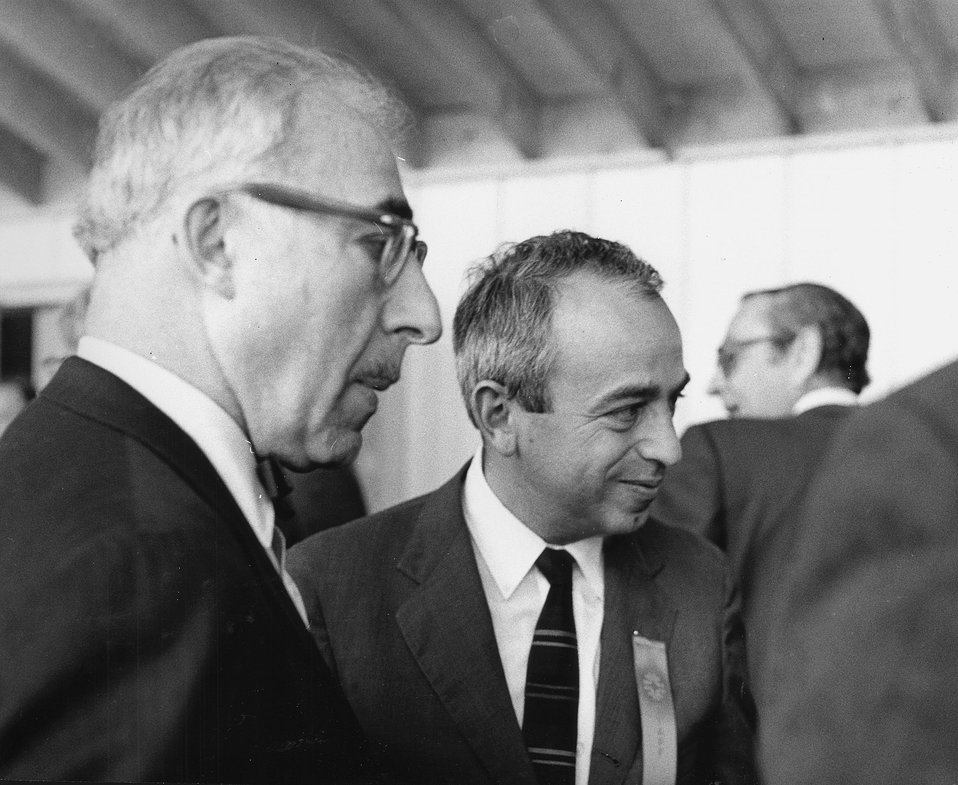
William Karp, Technical Consultant and Staff Director, Illinois Commission on Technology Progress; and Edwin Goldwasser, Deputy Director, NAL, at the reception in The Curia.
c.1968